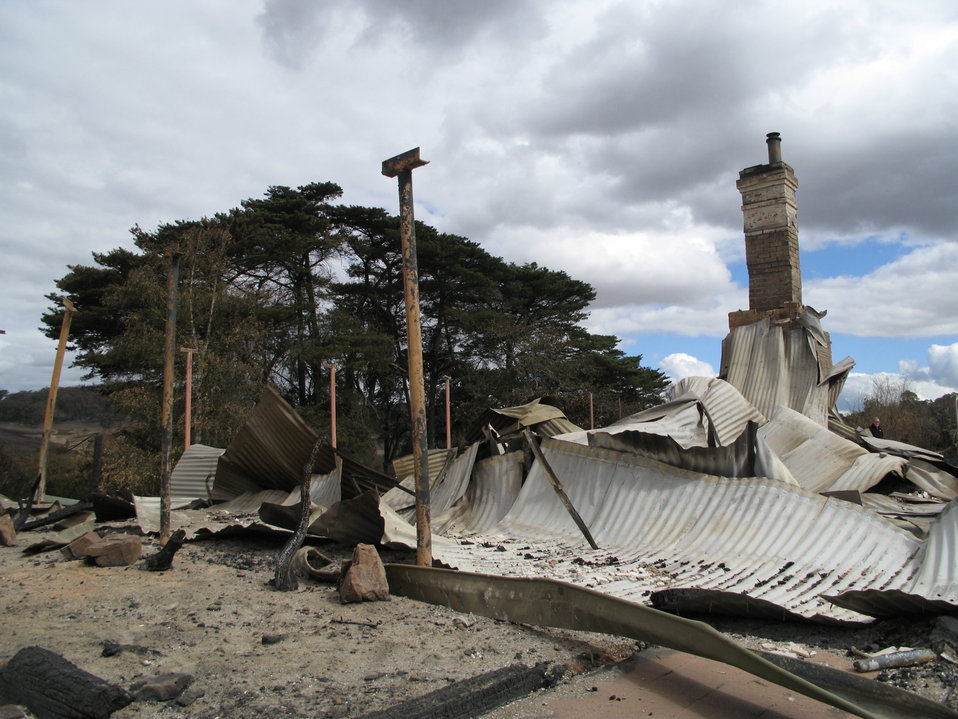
A house damaged by bushfires in the Kinglake complex, in Steels Creek. Photo taken by myself with verbal permission of the owners, 10th of February, 2009.